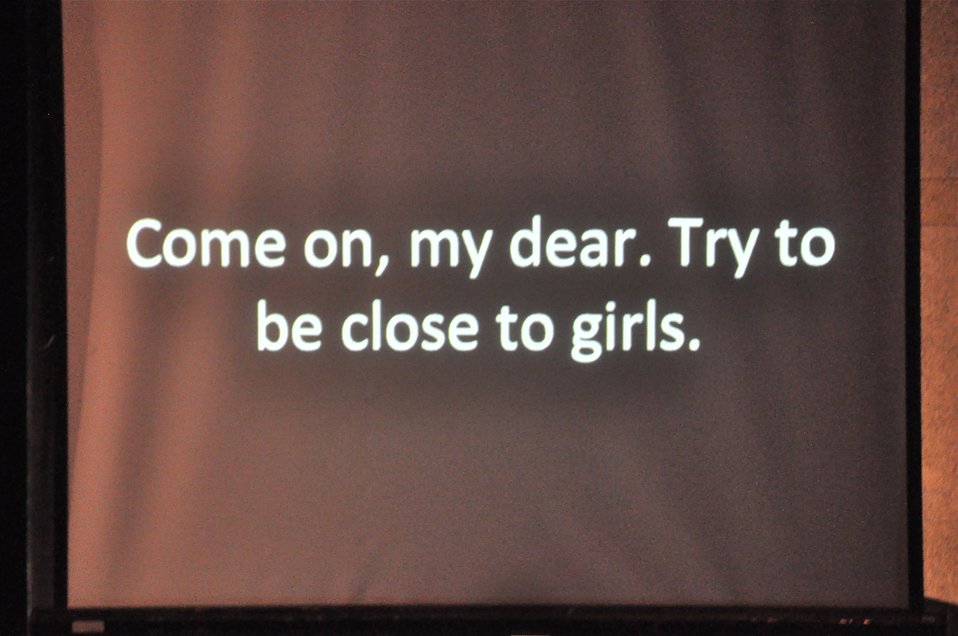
PEPFAR Musical Questions and Exclamations

Hanoi, May 17, 2013